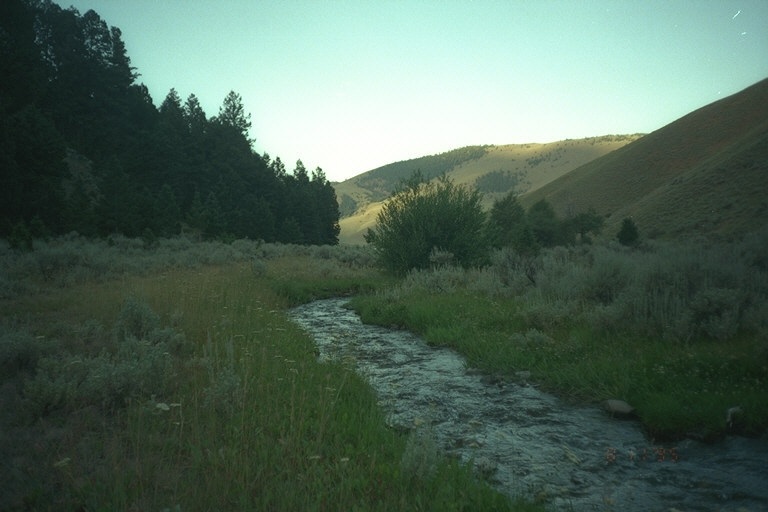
Riparian area Public Lands Salmon Field Office UCSC Upper Columbia Salmon Clearwater District